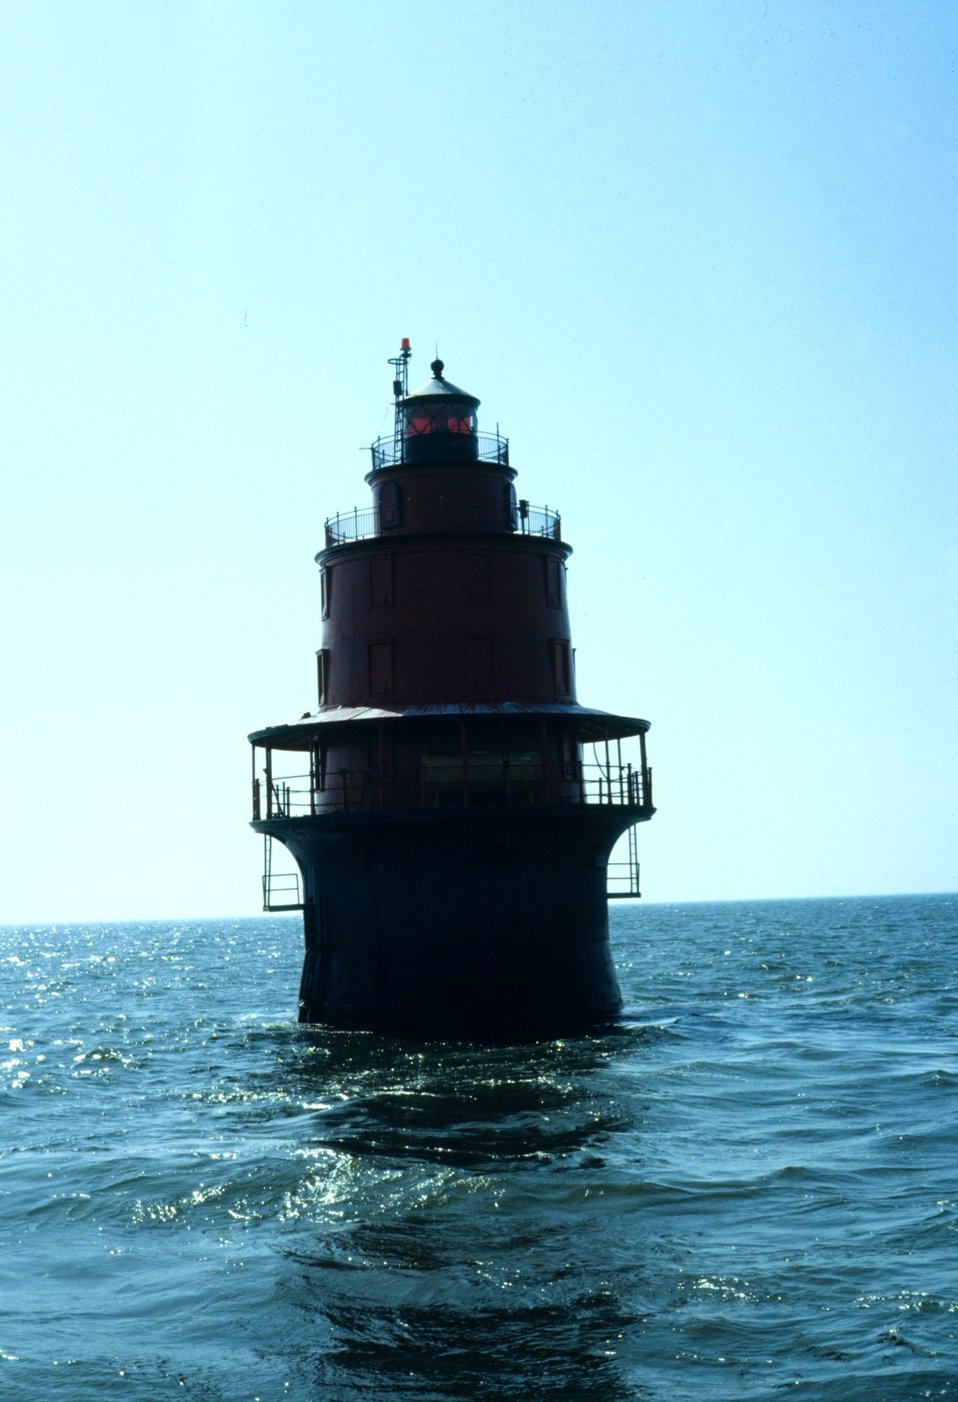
Miah Maull Lighthouse in central Delaware Bay.